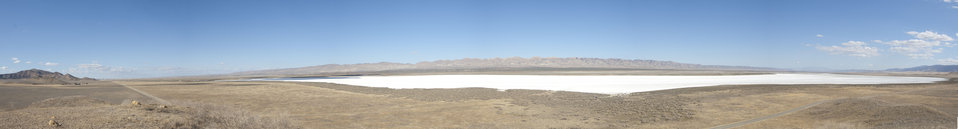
Soda Lake Panorama